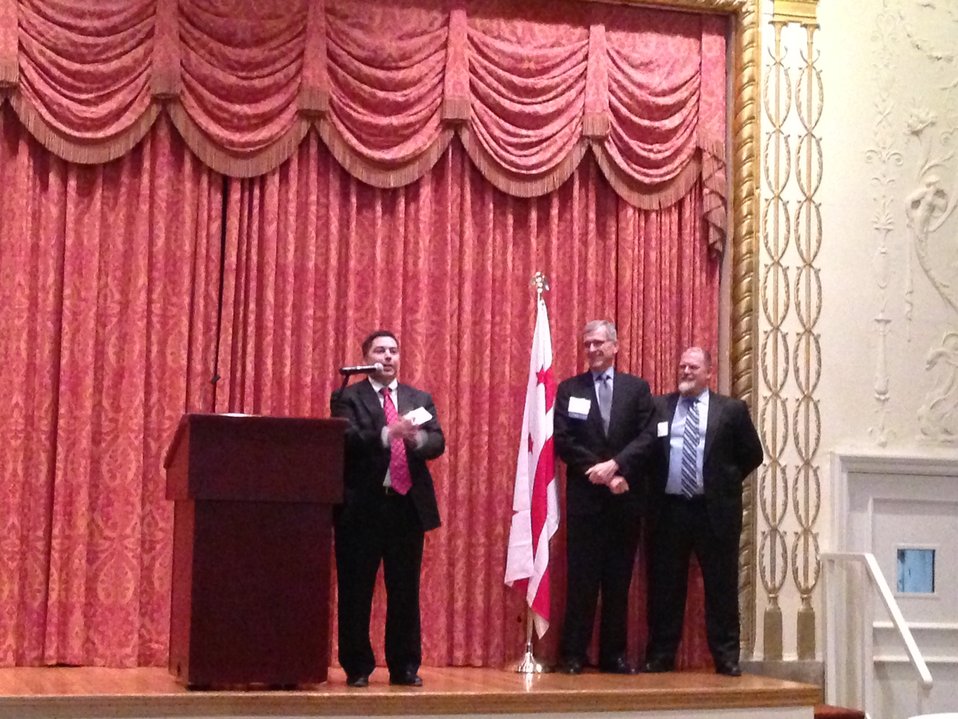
3.6.2014 FCBA Reception

Commissioner O'Rielly and Chairman Wheeler at the FCBA Reception, March 6, 2014